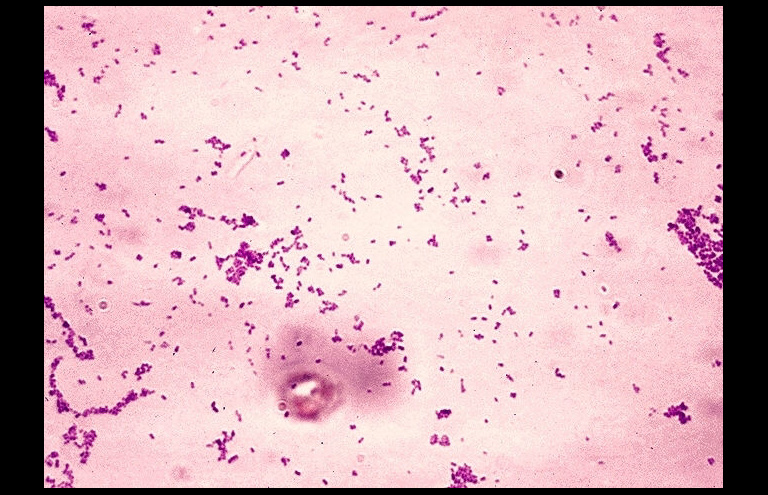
Streptococcus mutans. Gram stain.